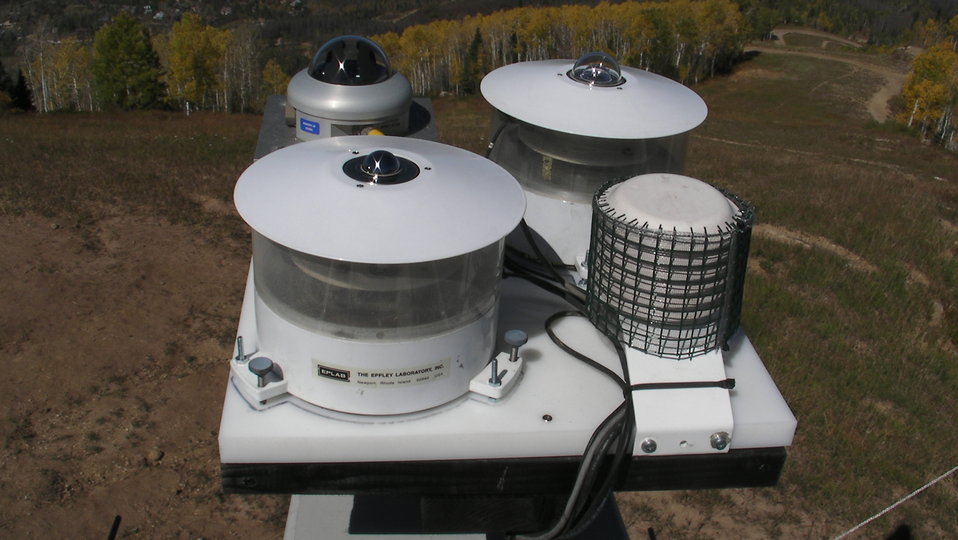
Shown are radiometer instruments past of Storm Vex field campaign at Pacific Northwest National Laboratory.

PNNL scientist are studying ice and mixed-phase clouds as part of the DOE ARM Program's Storm Vex field campaign. The study is being conducted at the Storm Peak Lab located on Colorado's Storm Peak (10,564 feet), a location known to be often embedded in clouds.